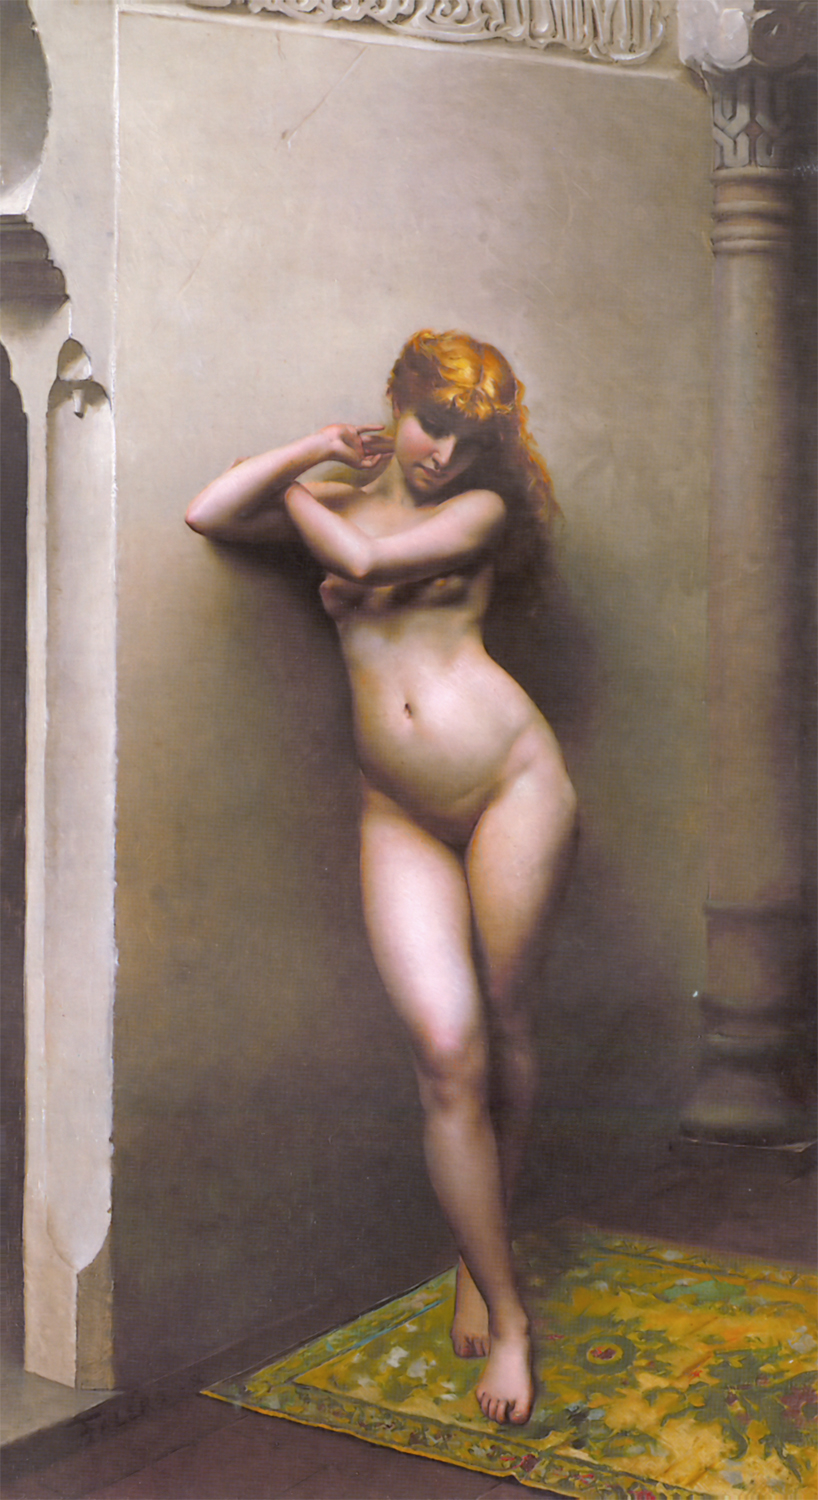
Falero Luis Riccardo La favorite 1880 Oil On Canvas